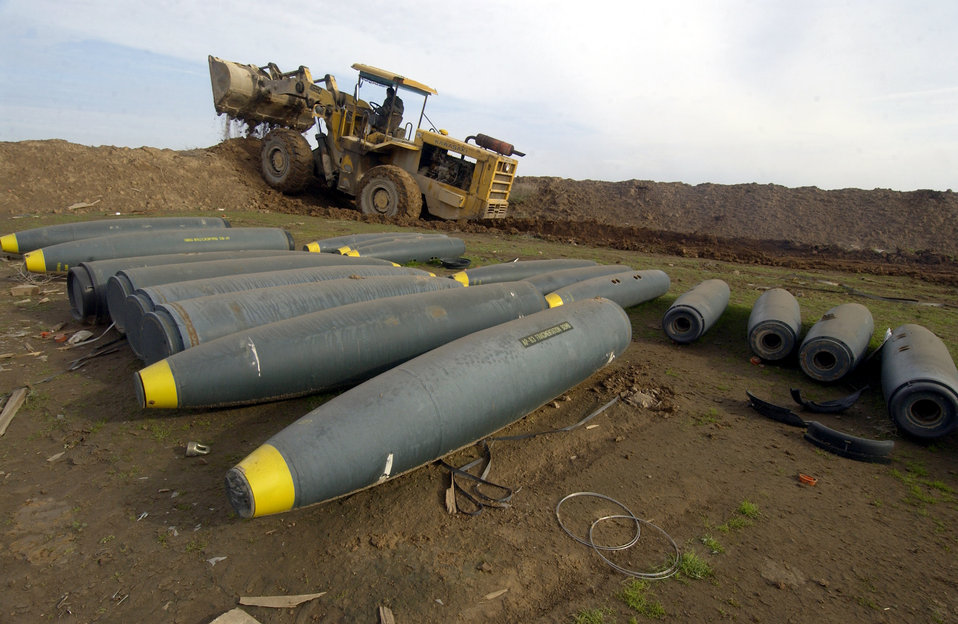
Ka-boom!

AL FATHAH AIR FIELD, Iraq -- Heavy equipment is used to bury part of a 2-million-net-pound weapons cache before Army engineers and Air Force explosive ordnance disposal workers can begin detonation Feb. 5. Officials said this is the largest single weapons cache uncovered to date. Coalition forces believe burying the explosives before detonation will reduce the risk of fallout on nearby villages.